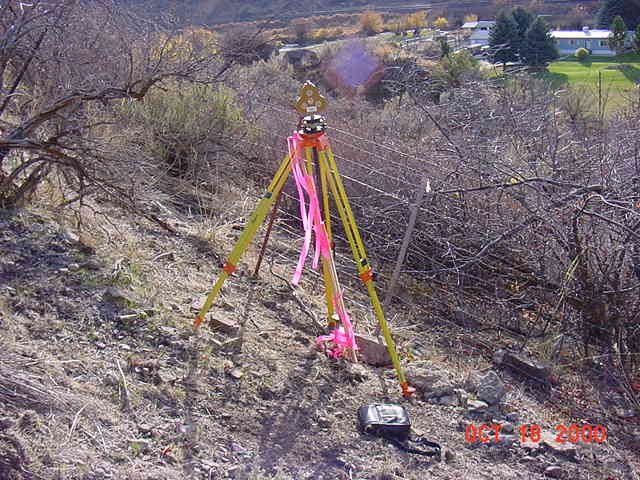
Cadastral Surveys Idaho Bureau of Land Management